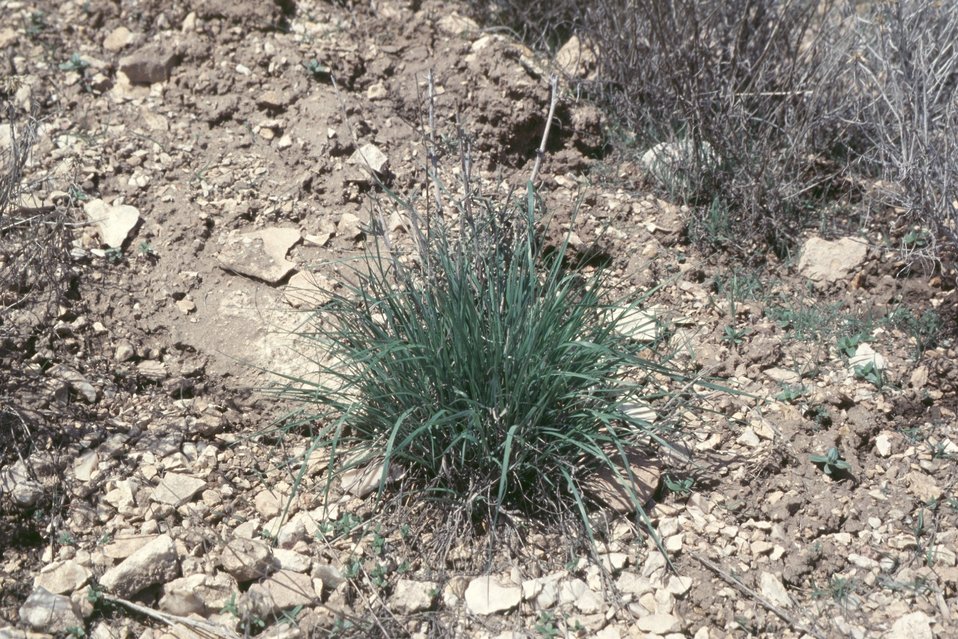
AML Glass Buttes, G3, Burns District Vegetation grows on rocky soil where seeds were spread after backfilling two abandoned mine shafts in 1999.